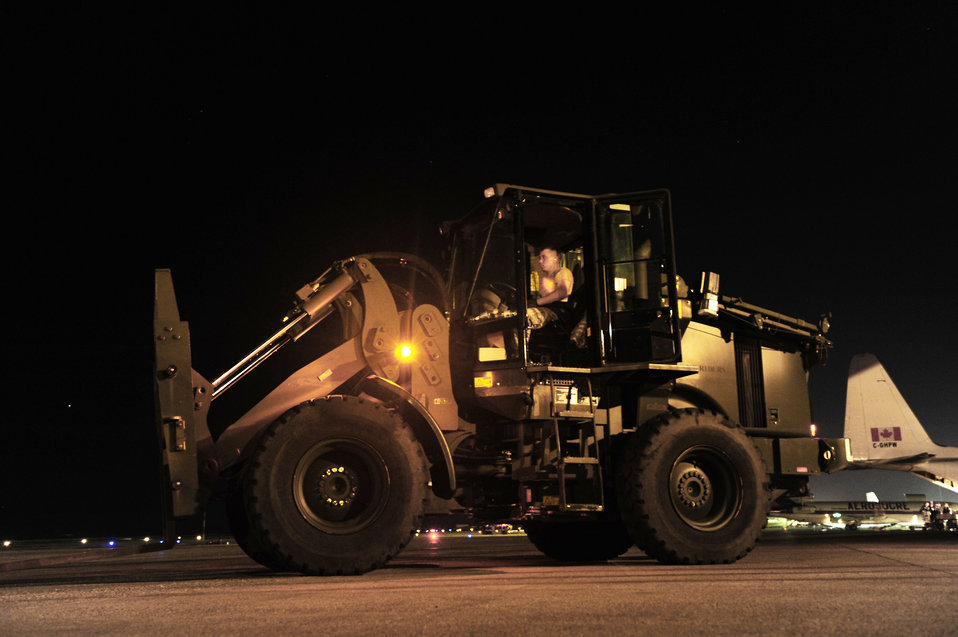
Haiti Relief Operations

Airmen from the 621st Contingency Response Wing at Joint Base McGuire-Dix-Lakehurst, N.J., off load cargo from a C-17 Globemaster III, Jan. 15, 2010, at the airport in Port-au-Prince to support relief efforts for Haiti.